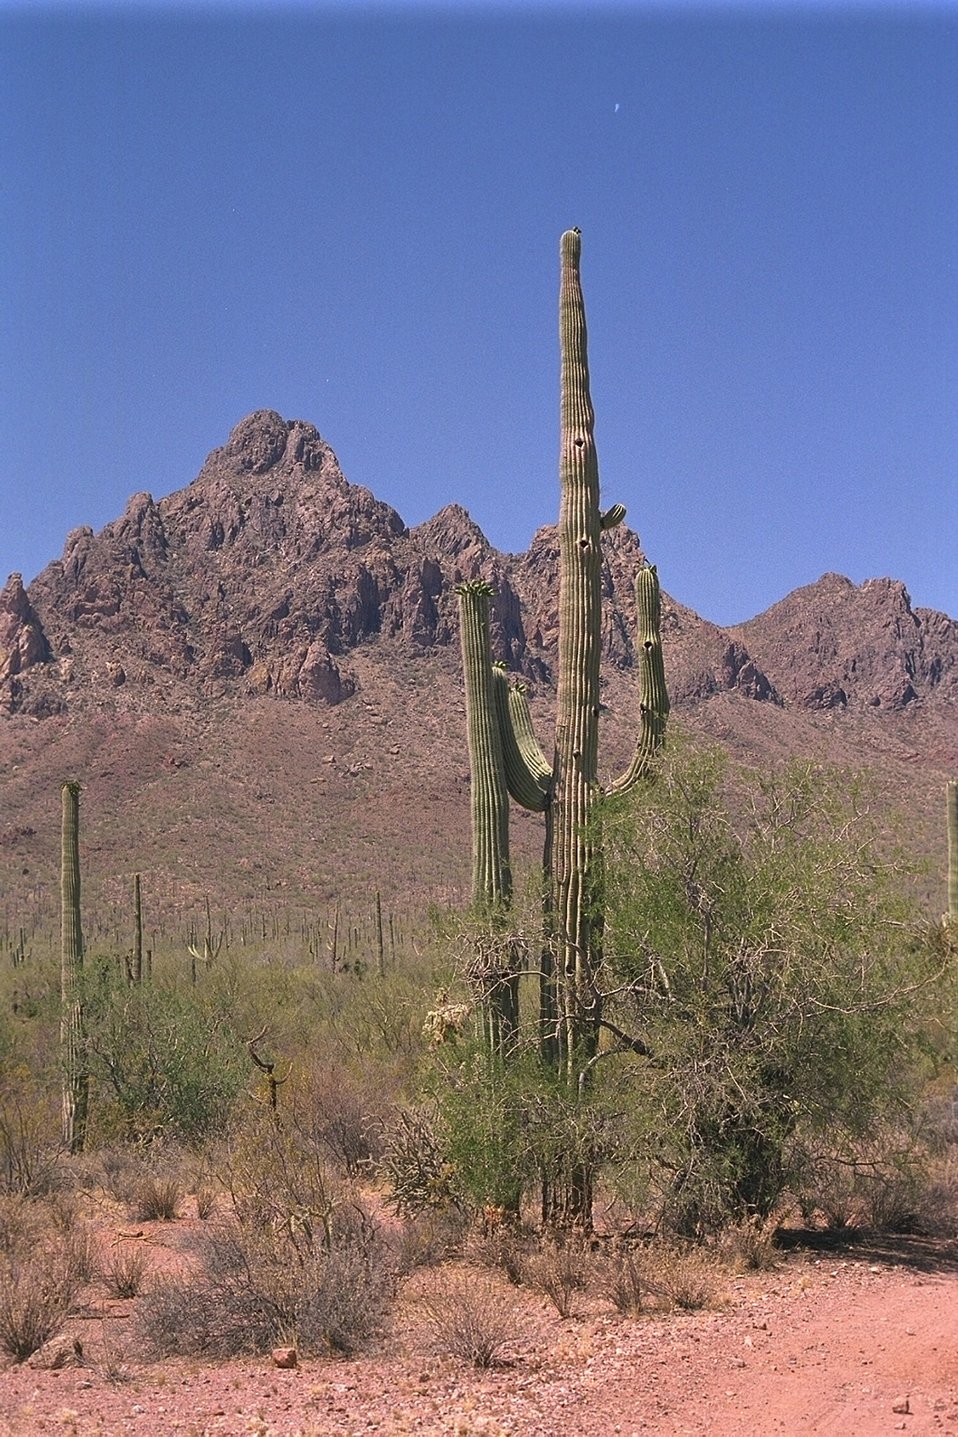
Two tall Saguaro Cacti standing tall in the Ironwood Forest National Monument. The background is the Ragged Top Mountain, described as the biological and geological crown jewel of the Silver Bell Mountains.